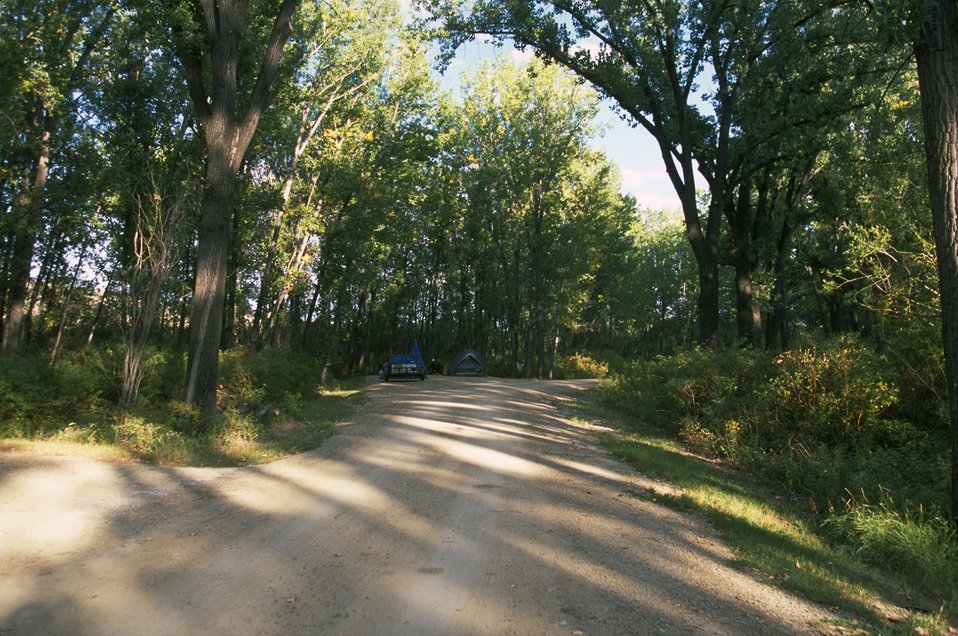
Kipp Recreation Area